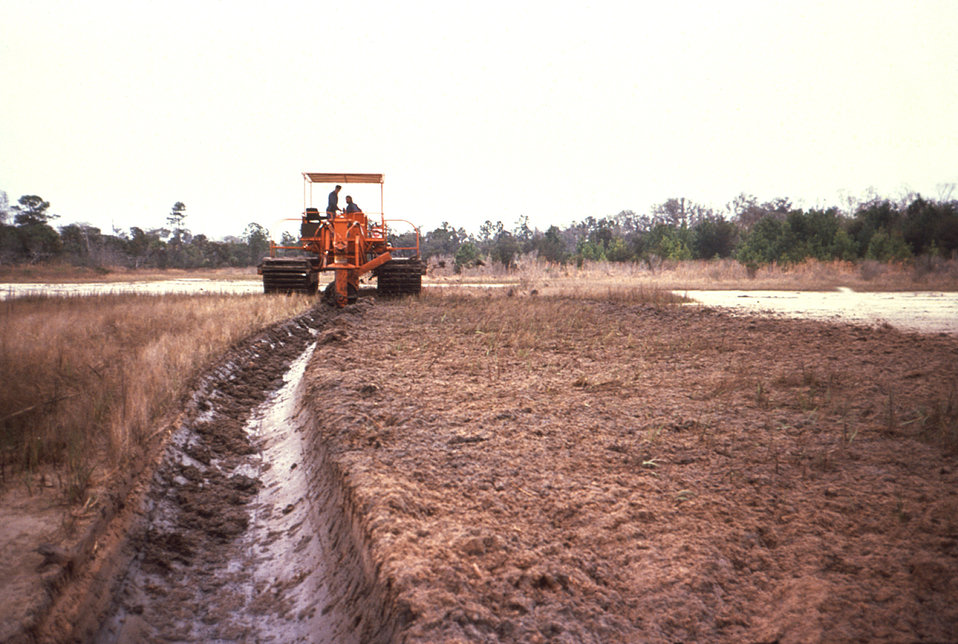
This photograph depicts a drainage ditch after having been dug by an amphibious rotary ditcher (ARD), which had been outfitted with a 'cutter-slinger' head.